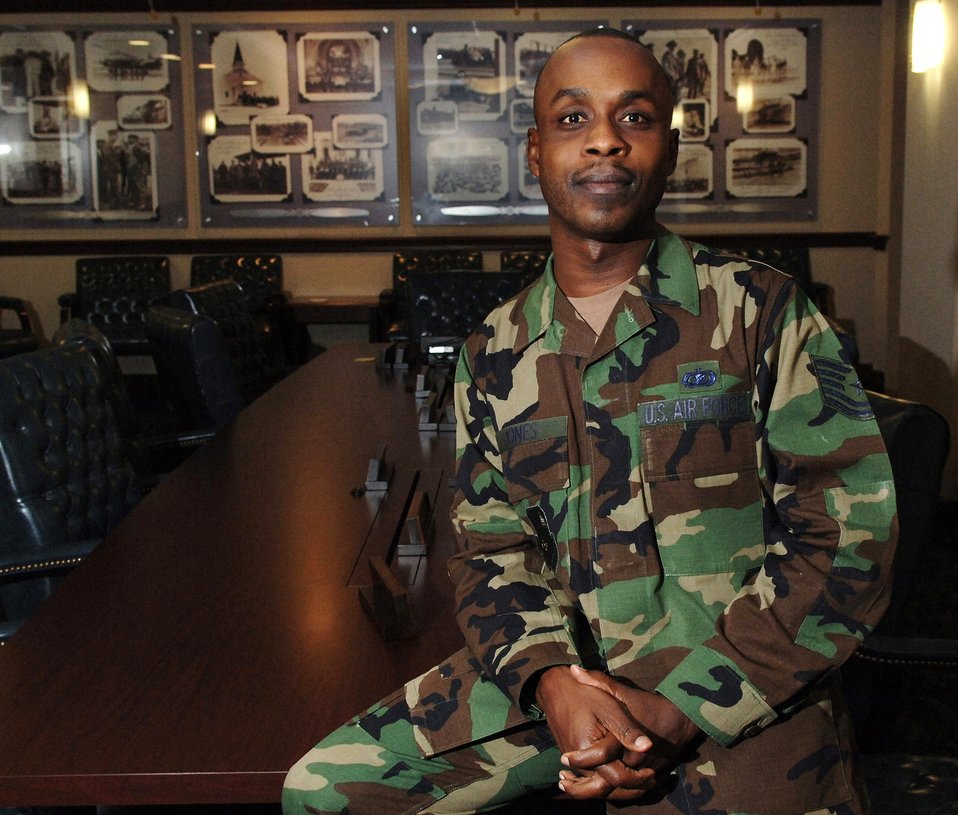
AF Memorial: NCO brings spirit of volunteerism

Tech. Sgt. Donald Jones sits inside the conference room of the 11th Wing Headquarters building Oct. 11 at Bolling Air Force Base, Washington D.C. Sergeant Jones is the executive assistant to command chief with the Air Force District of Washington. He is involved with the Air Force Memorial dedication ceremony Oct. 14 in Arlington, Va.